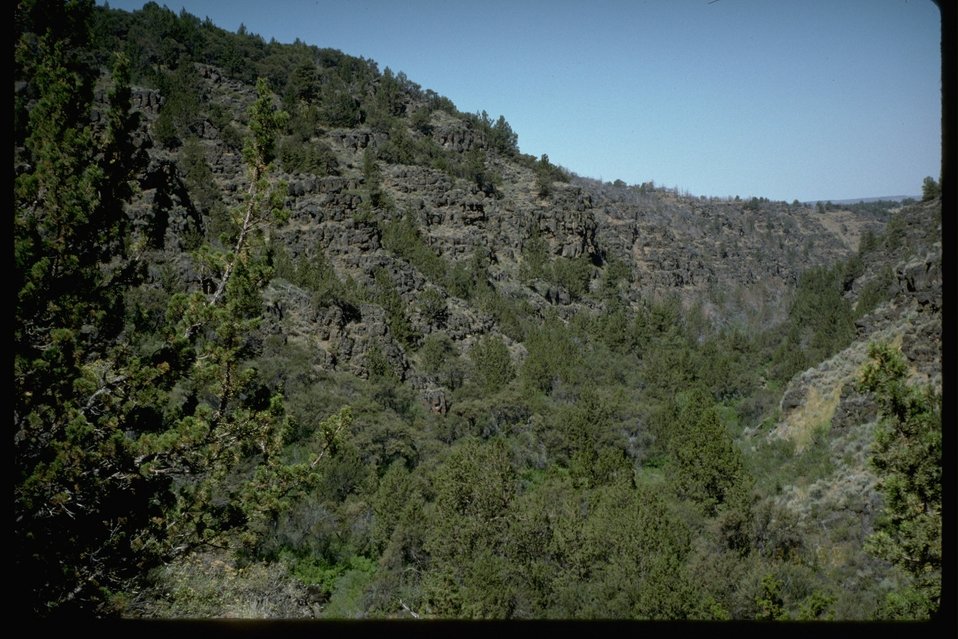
Juniper Zone in the Donner und Blitzen WSR Canyon in the South Steens.